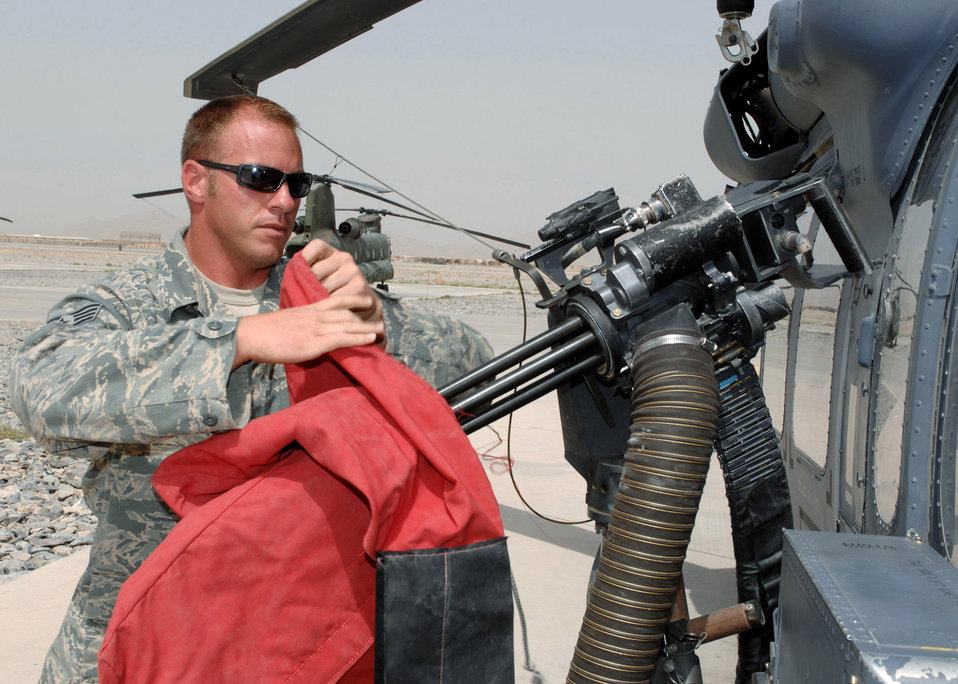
Air Force Reserve rescuers change role, still save lives in Afghanistan

Staff Sgt. Ernest Kunde removes the dust cover off the gun of a HH-60G Pave Hawk before an alert mission at Kandahar Air Field, Afghanistan. Sergeant Kunde is a 305th Expeditionary Rescue Squadron HH-60G Pave Hawk crew chief.